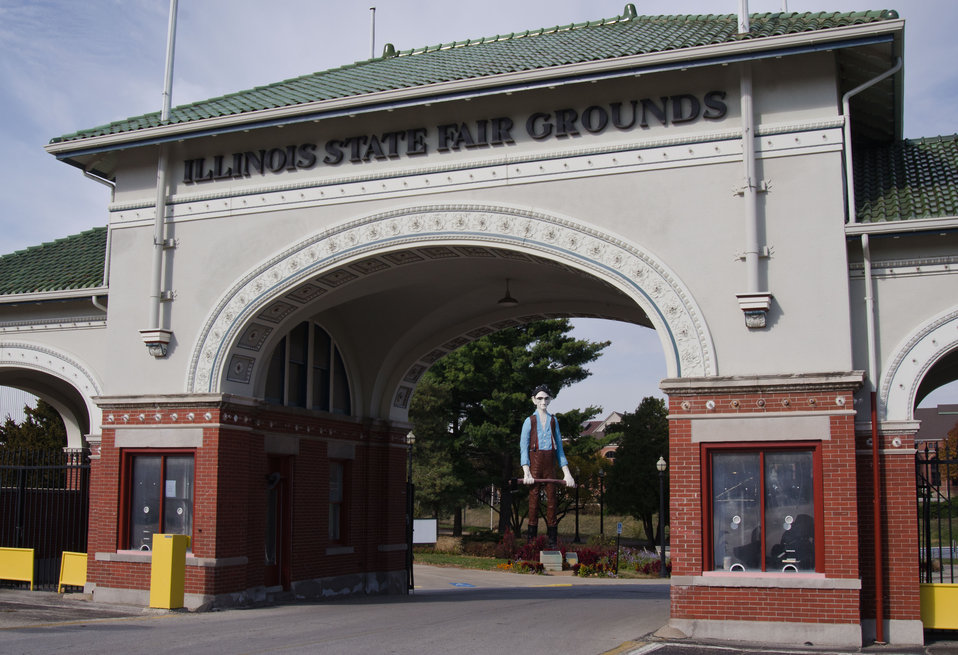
The Illinois State Fair Grounds is where the U.S. Department of Agriculture National Agricultural Statistics Service office (not seen) is located, in Springfield, IL, on Wednesday, November 2, 2011.